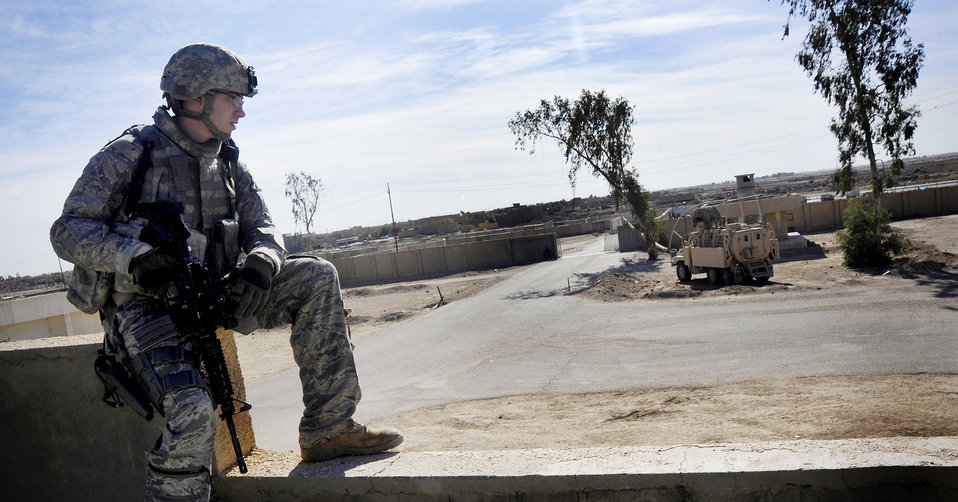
Airmen mentor Iraqi police officers

Senior Airman Christopher Cable provides security at a local police station during a meeting, Nov. 15, 2009, at Baghdad, Iraq. The meeting was held as part of a mentorship effort that aims to ensure the Iraqi police are trained in how to collect data and serve warrants in their city. Airman Cable is a 732nd Expeditionary Security Forces Squadron Det 2 fire team member deployed to Baghdad, Iraq.